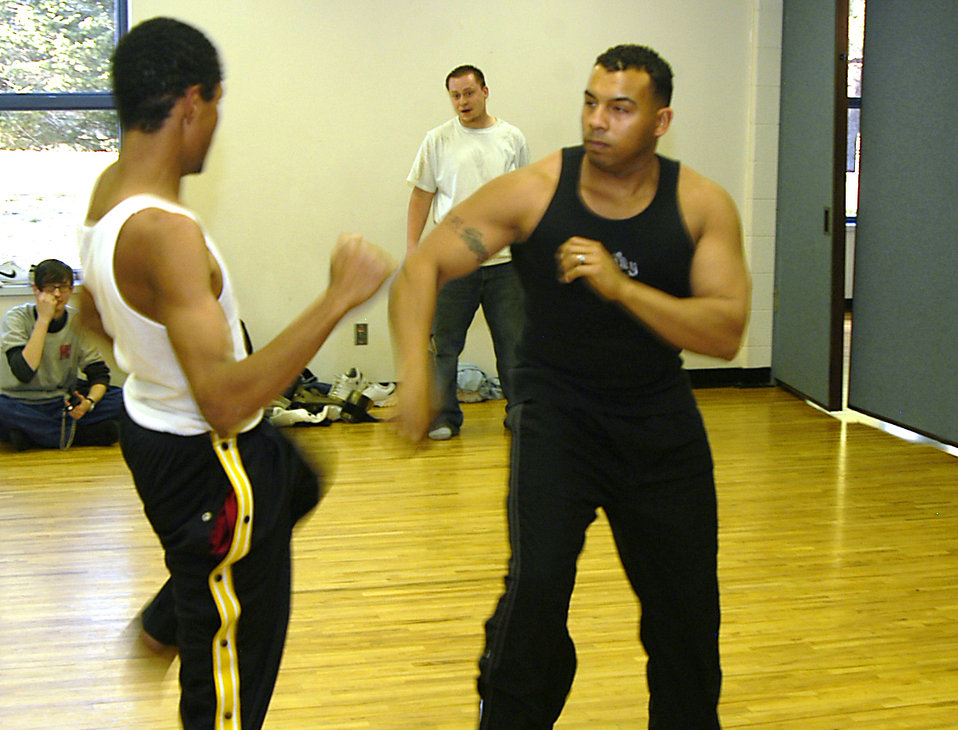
NCO mentors through martial arts

Staff Sgt. Dave Armstrong, right, spars with Santiago, 18, at a local community center in Colorado Springs, Colo., on Tuesday, April 11, 2006. Sergeant Armstrong, known to his students as Sensei Dave, teaches martial-arts classes for at-risk teens. Sergeant Armstrong is an information manager with Detachment 2 of the 17th Test Squadron at Cheyenne Mountain Air Force Station, Colo.